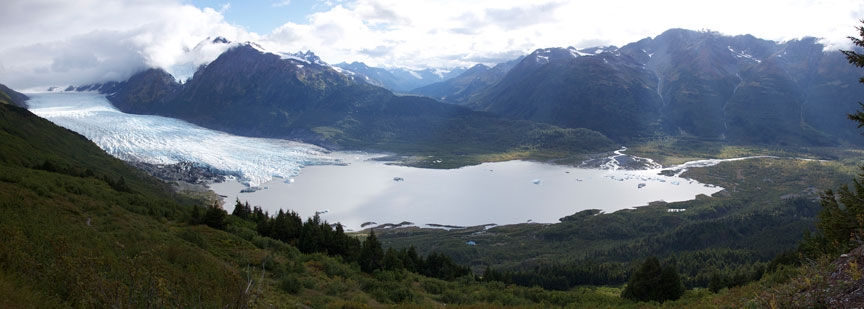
Spencer Glacier-Placer River panorama

The longest timber truss bridge in North America is under construction in Alaska at the right edge of the photo where Spencer Glacier/Lake and the Placer River meet.